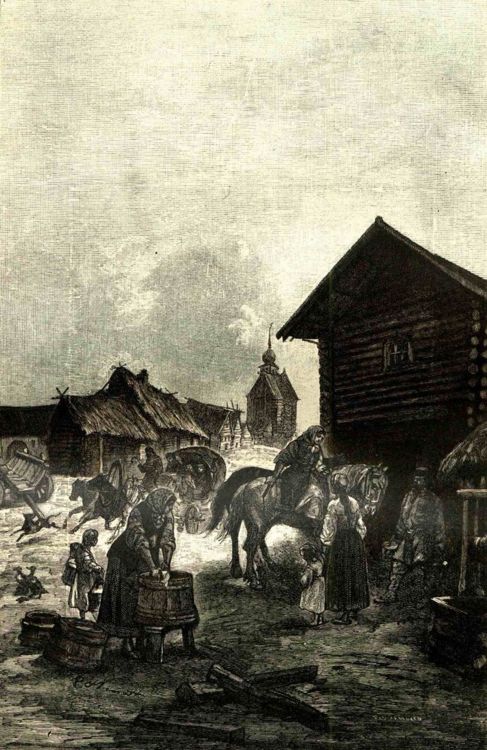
An illustration from the novel 'Michael Strogoff: The Courier of the Czar' by Jules Verne drawn by Jules Férat. Polski: Ilustracja powieści Juliusza Verne'a 'Michał Strogow, kurier carski' autorstwa Julesa Férata. Français : 'Michel Strogoff. Le courier du tzar', Jules Férat. Français : Un relais de poste en Sibérie.